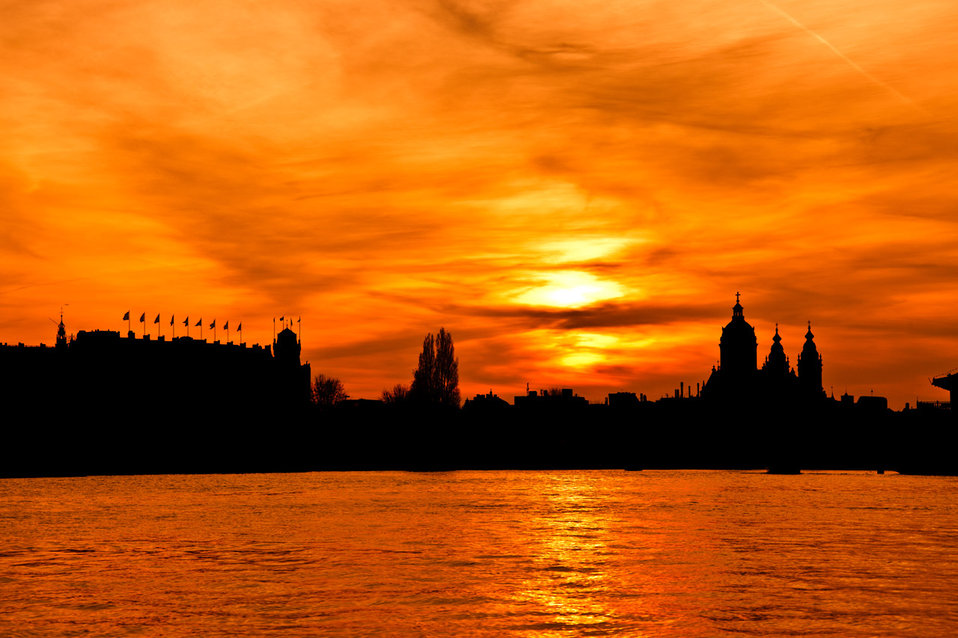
City silhouette at sunset

Orange sunset with amsterdam silhouette.